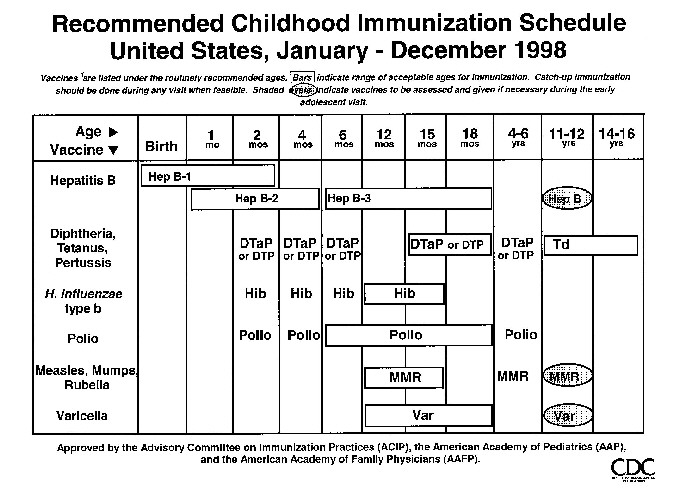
Childhood Immunization Schedule